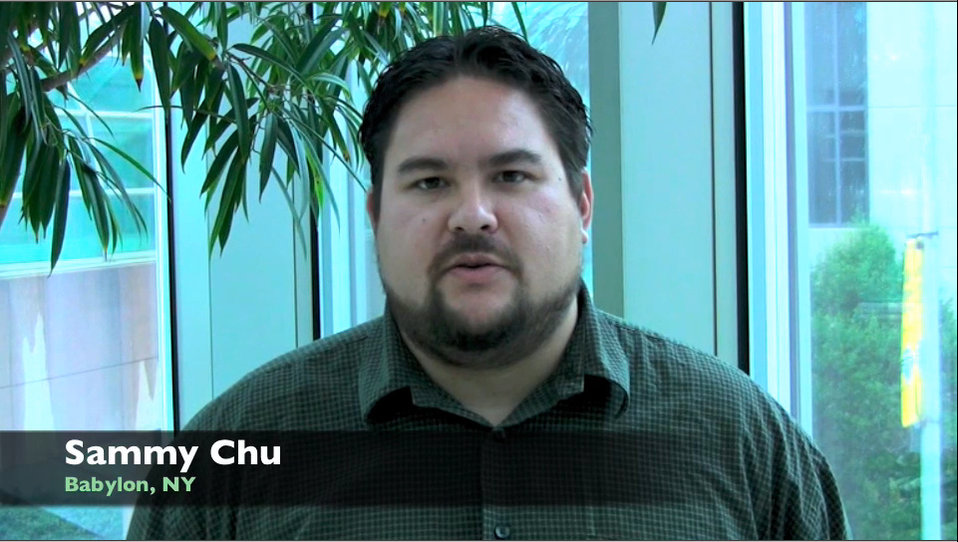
Sammy Chu at the National Weatherization Conference

'We’re creating local jobs, hyper, local jobs. You know these are jobs that can’t be outsourced. They’re, they’re smaller scope jobs and odd jobs that big construction companies are coming out of state to do. It’s people from the community. It’s people from the area.'